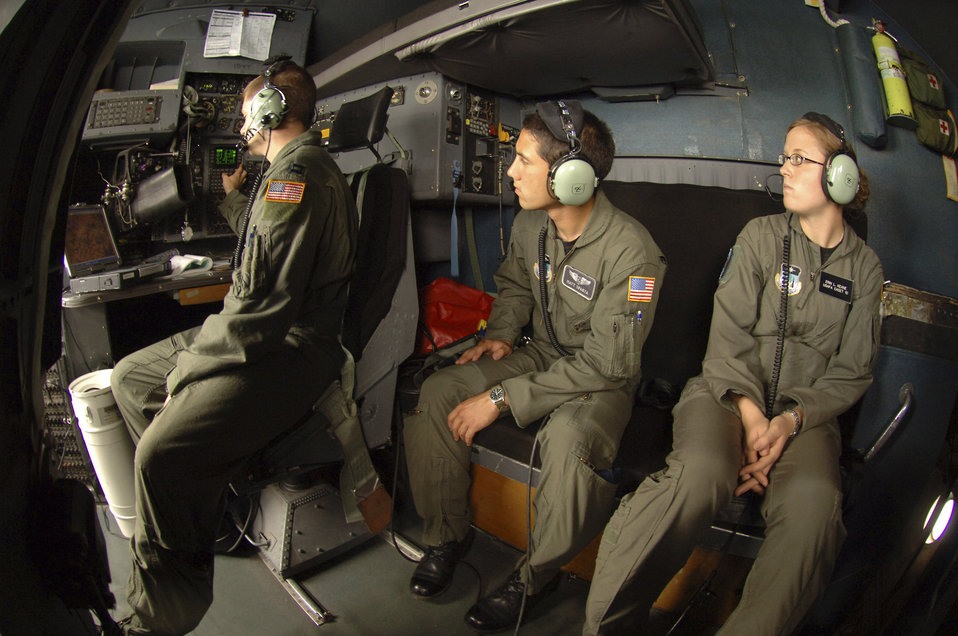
Operation Air Force puts cadets in the air over Europe

During a C-130 Hercules airdrop mission over eastern Germany, Air Force Academy Cadet 1st Class Matt Sparta (center) and Cadet 2nd Class Erin Keane watch how navigator Capt. Michael Trimble keeps the Hercules on course as part of a hands-on job shadow program called Operation Air Force.